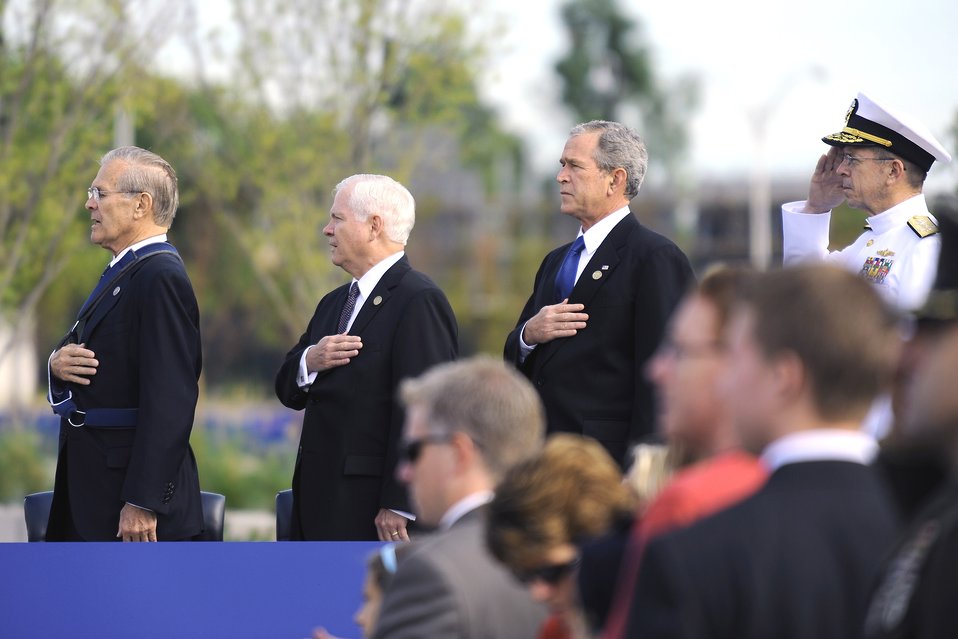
Pentagon Memorial opens to public

President George W. Bush, Secretary of Defense Robert M. Gates and former Secretary of Defense Donald Rumsfeld stand as the national anthem plays at the Pentagon Memorial dedication ceremony Sept. 11 at Alexandria, Va. The national memorial is the first to be dedicated to those killed at the Pentagon on Sept. 11, 2001. The site contains 184 inscribed memorial units honoring the 59 people aboard American Airlines Flight 77 and the 125 in the building who lost their lives that day.